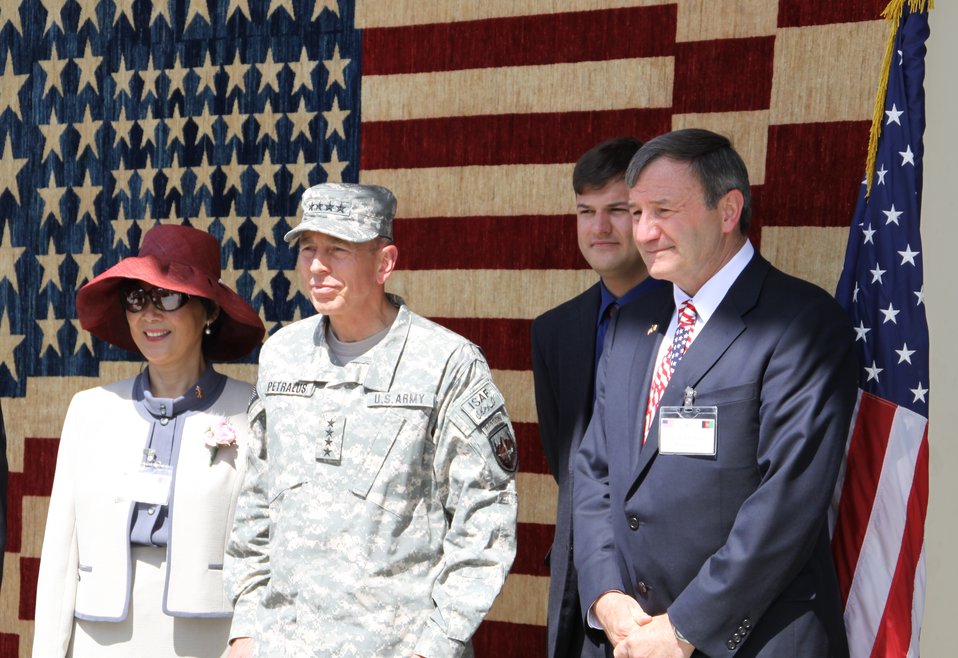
Kabul Official July 4th Celebration